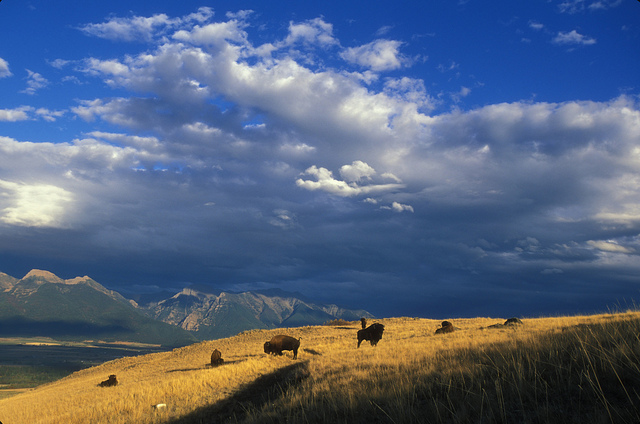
National Bison Range, MT